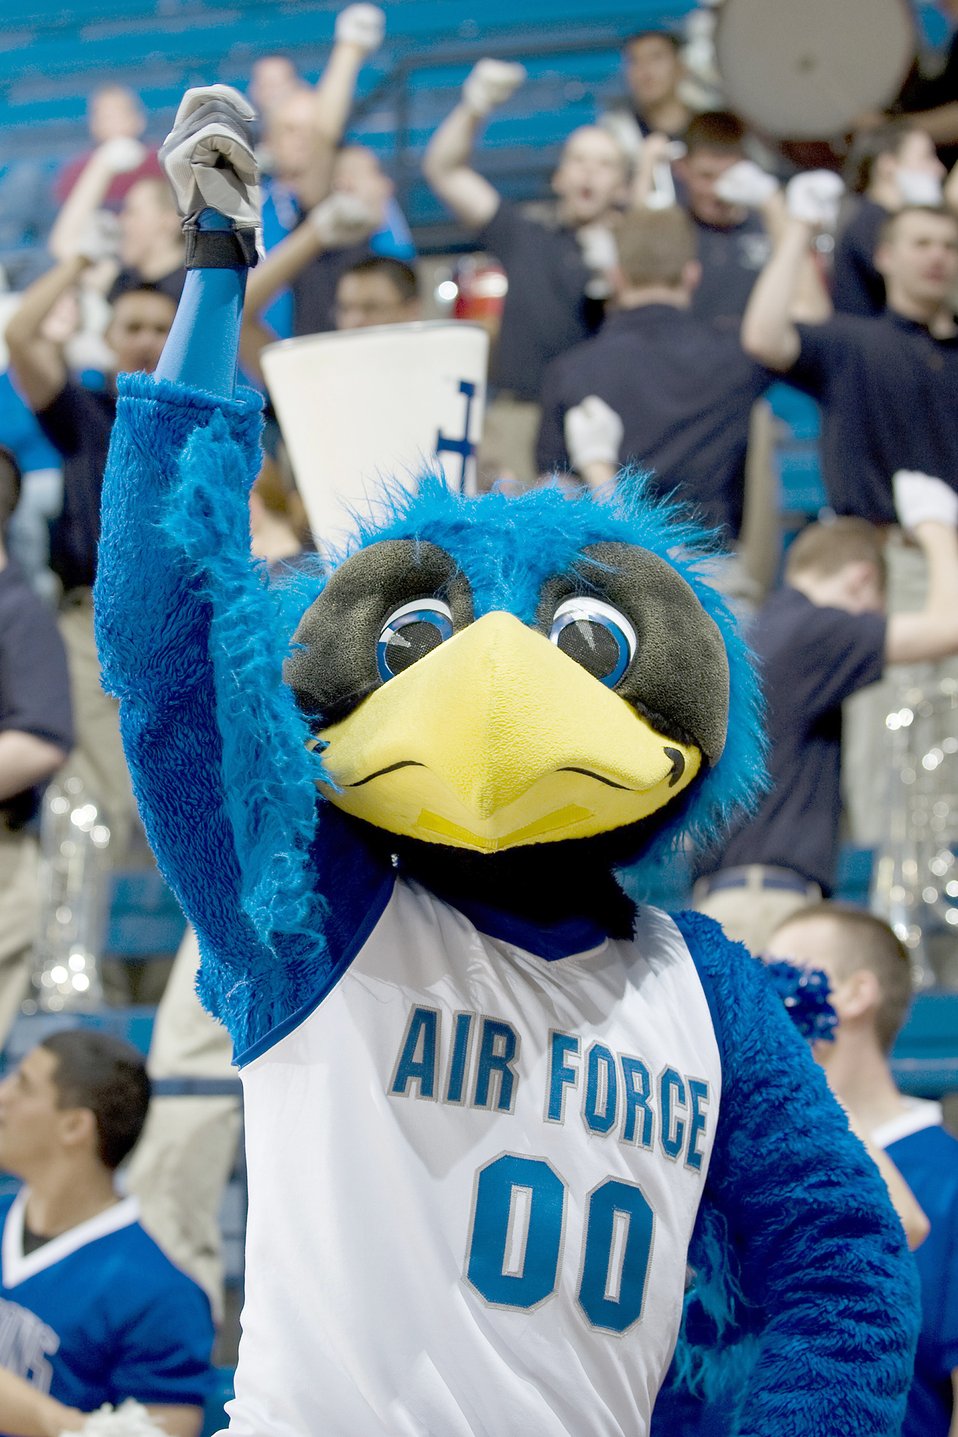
Falcons fall to Running Rebels

The Air Force Bird tries to rally the crowd and get the Falcons going in the right direction during the first half of the game against the University of Nevada Las Vegas Running Rebels at the U.S. Air Force Academy's Clune Arena, Feb. 27, 2010.